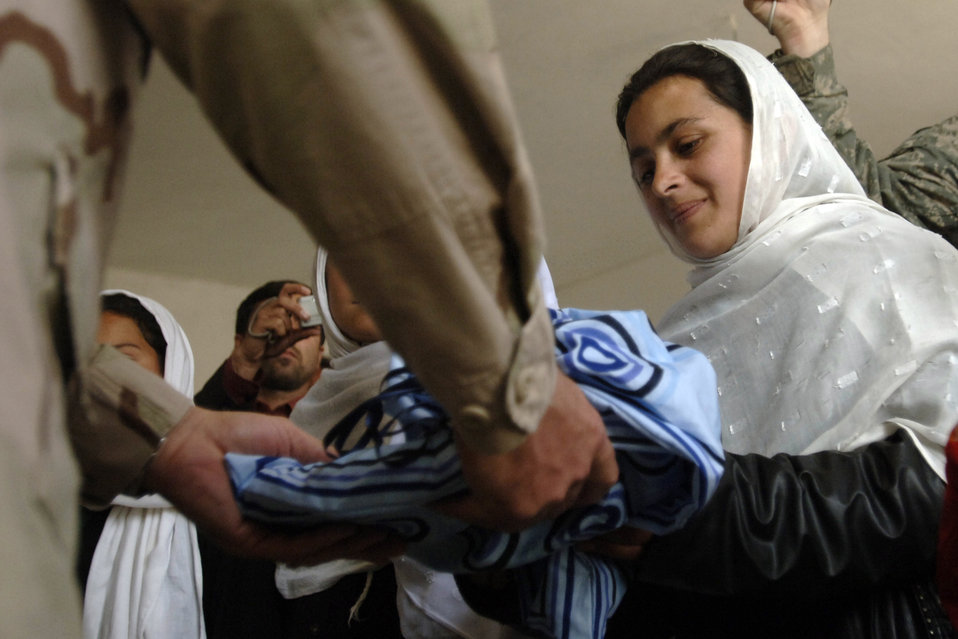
Bagram PRT rebuilds Afghanistan one school at a time

A local Afghan student receives donated school supplies from Brig. Gen. Christopher Miller at the Mahmud Raqi High School in the town of Deh Baba Ali, Afghanistan, March 26. Bagram Provincial Reconstruction Team members aided in building the high school and donated approximately 3,000 pine and fruit trees along with several bundles of school supplies. General Miller is the 455th Expeditionary Wing commander.